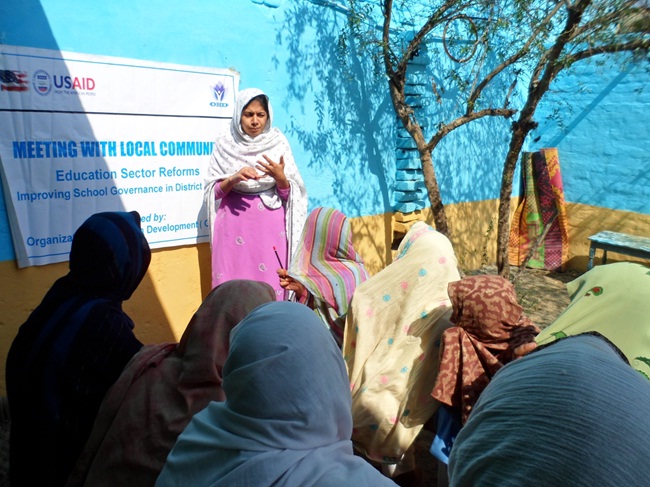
Caption 15 - OHD - Meeting the Community - Mardan

Organization for Human Development (OHD) is implementing a project on education sector reforms in Mardan, Khyber Pakhtunkhwa under USAID’s Citizens’ Voice Project. The project is an advocacy-oriented initiative working towards improved citizens’ engagement with state institutions for better services in the education sector. Here, a female social organizer can be seen addressing a gathering of the community women during an awareness session on the right to education under Article 25-A of the Constitution of Pakistan.